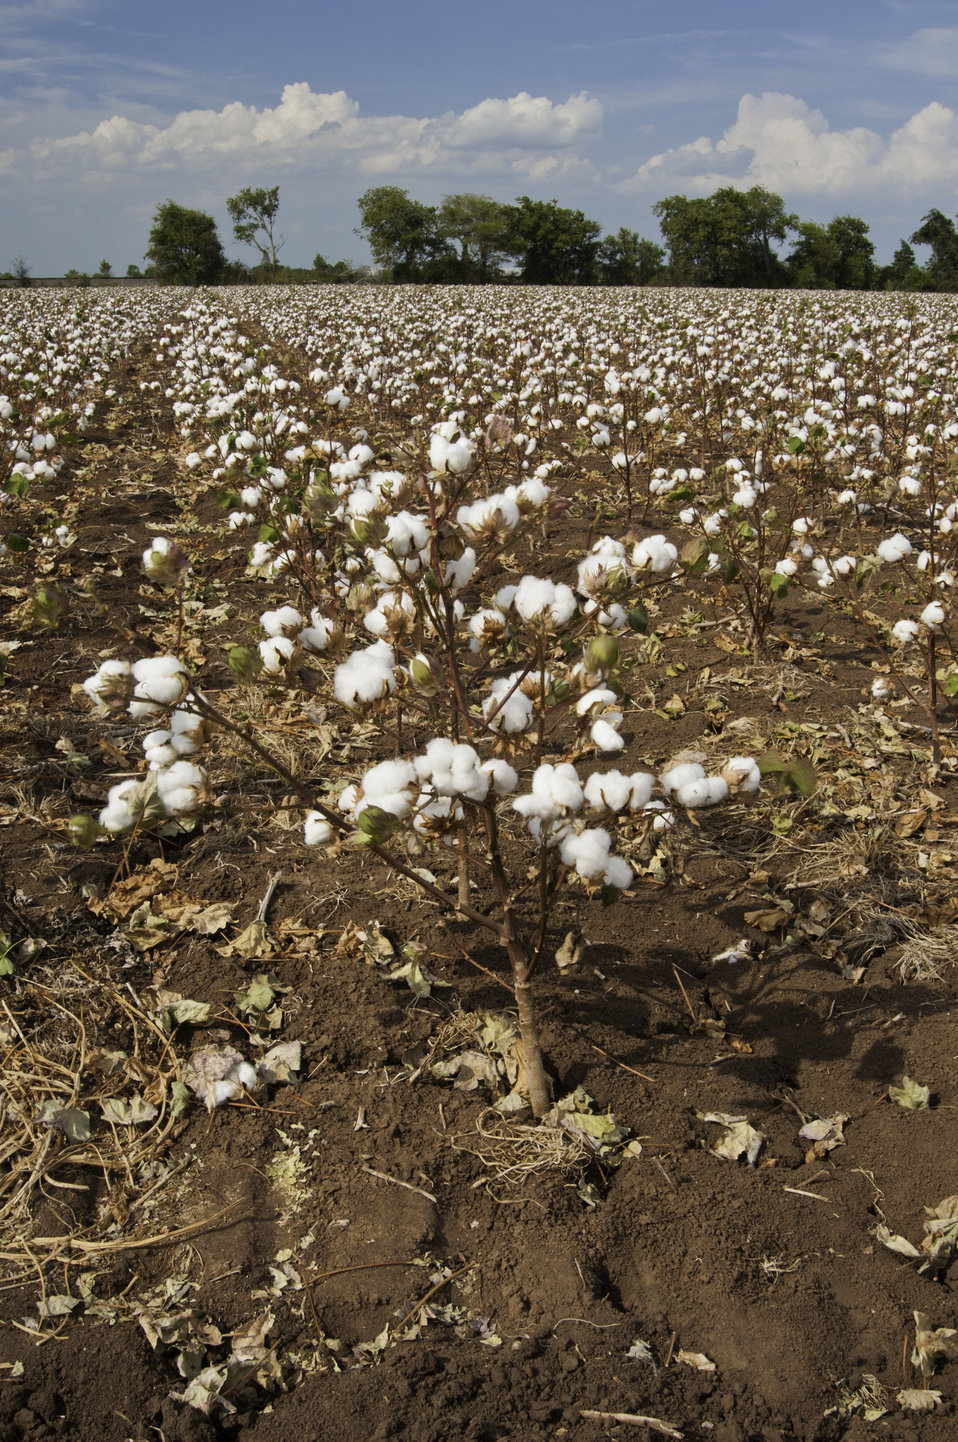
Dry Land cotton grows on a farm in Navasota, TX on Aug. 23, 2013.